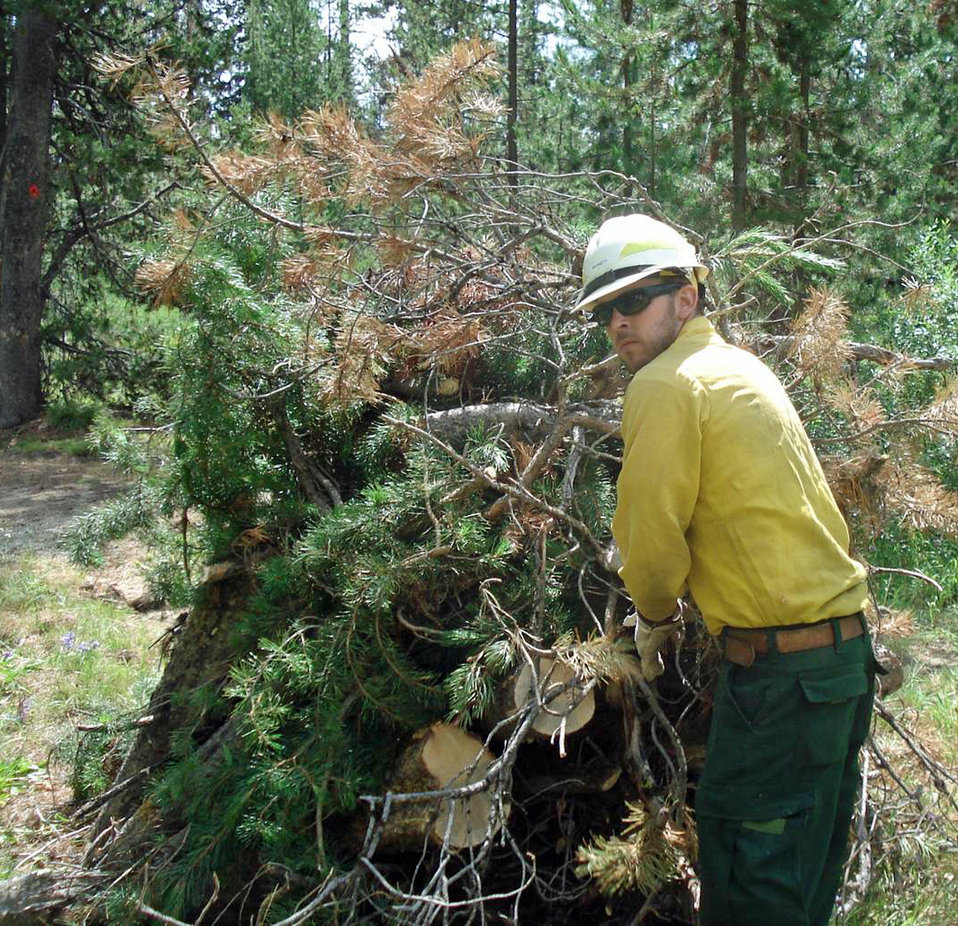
Barnett Centennial JCCCC-a

March 2013 graduate of the Centennial Job Corps Civilian Conservation Center Thomas Barnett works on building slash piles to help thin unwanted forest fuels on the Boise National Forest, Idaho. Barnett will start work as part of fire crew in May and put his newly minted wildland firefighting skills to work as he pursues a career in firefighting.